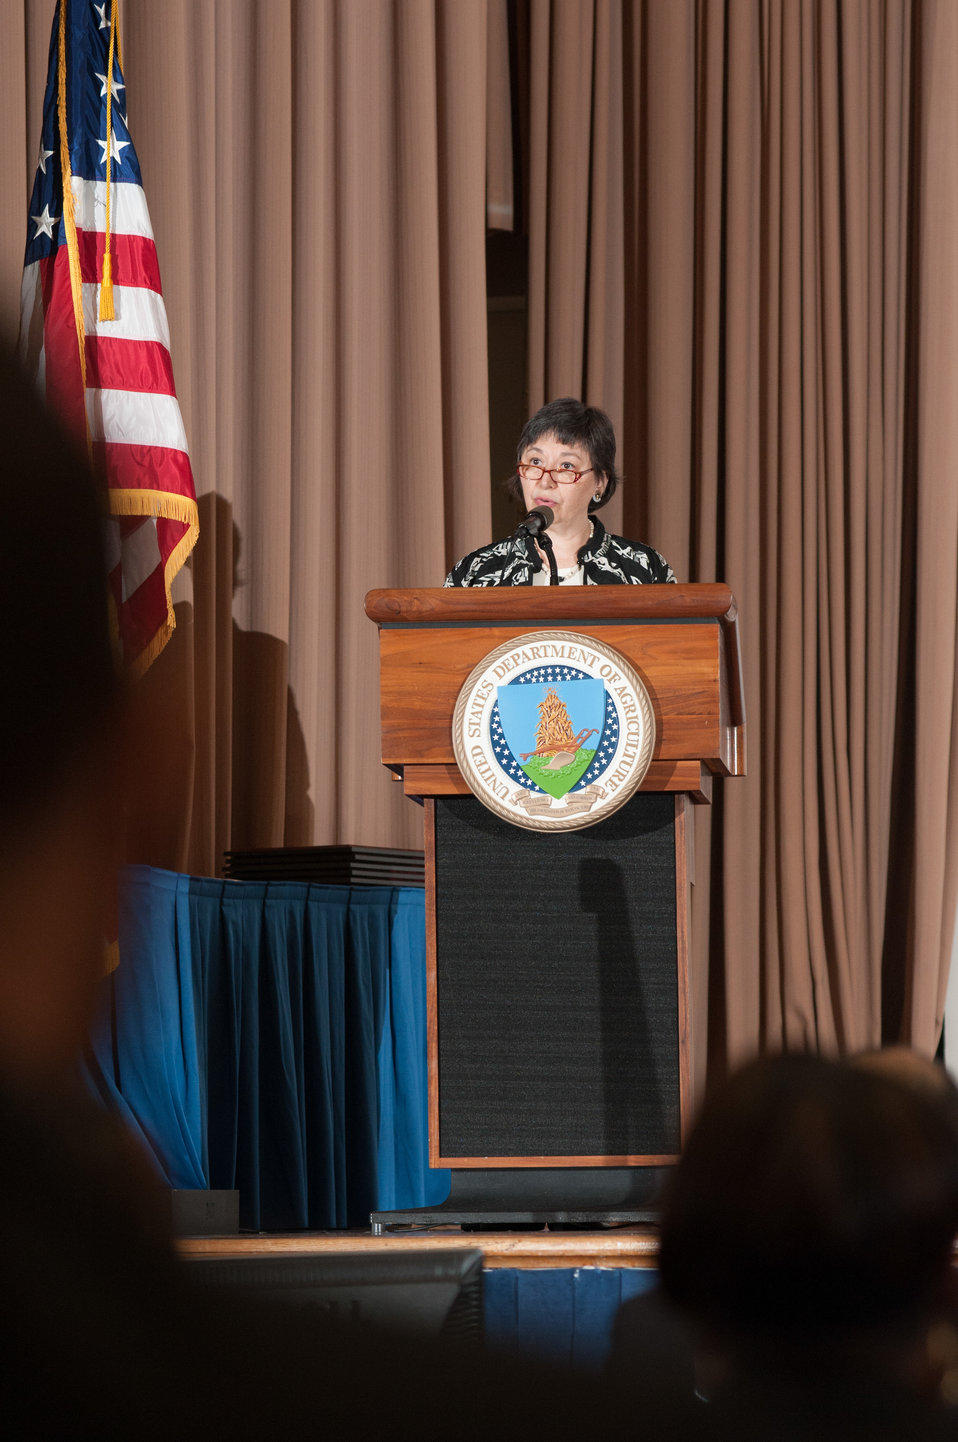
U.S. Department of Agriculture (USDA) Foreign Agricultural Service (FAS) Associate Administrator Janet Nuzum presents a tribute to Senator Daniel Inouye, during the USDA Asian Pacific American Heritage Month Observance, at the USDA headquarters in Washington, D.C., on Thursday, May 23, 2013. This year’s theme is “Building leadership; Embracing the Cultural Values and Inclusions.”